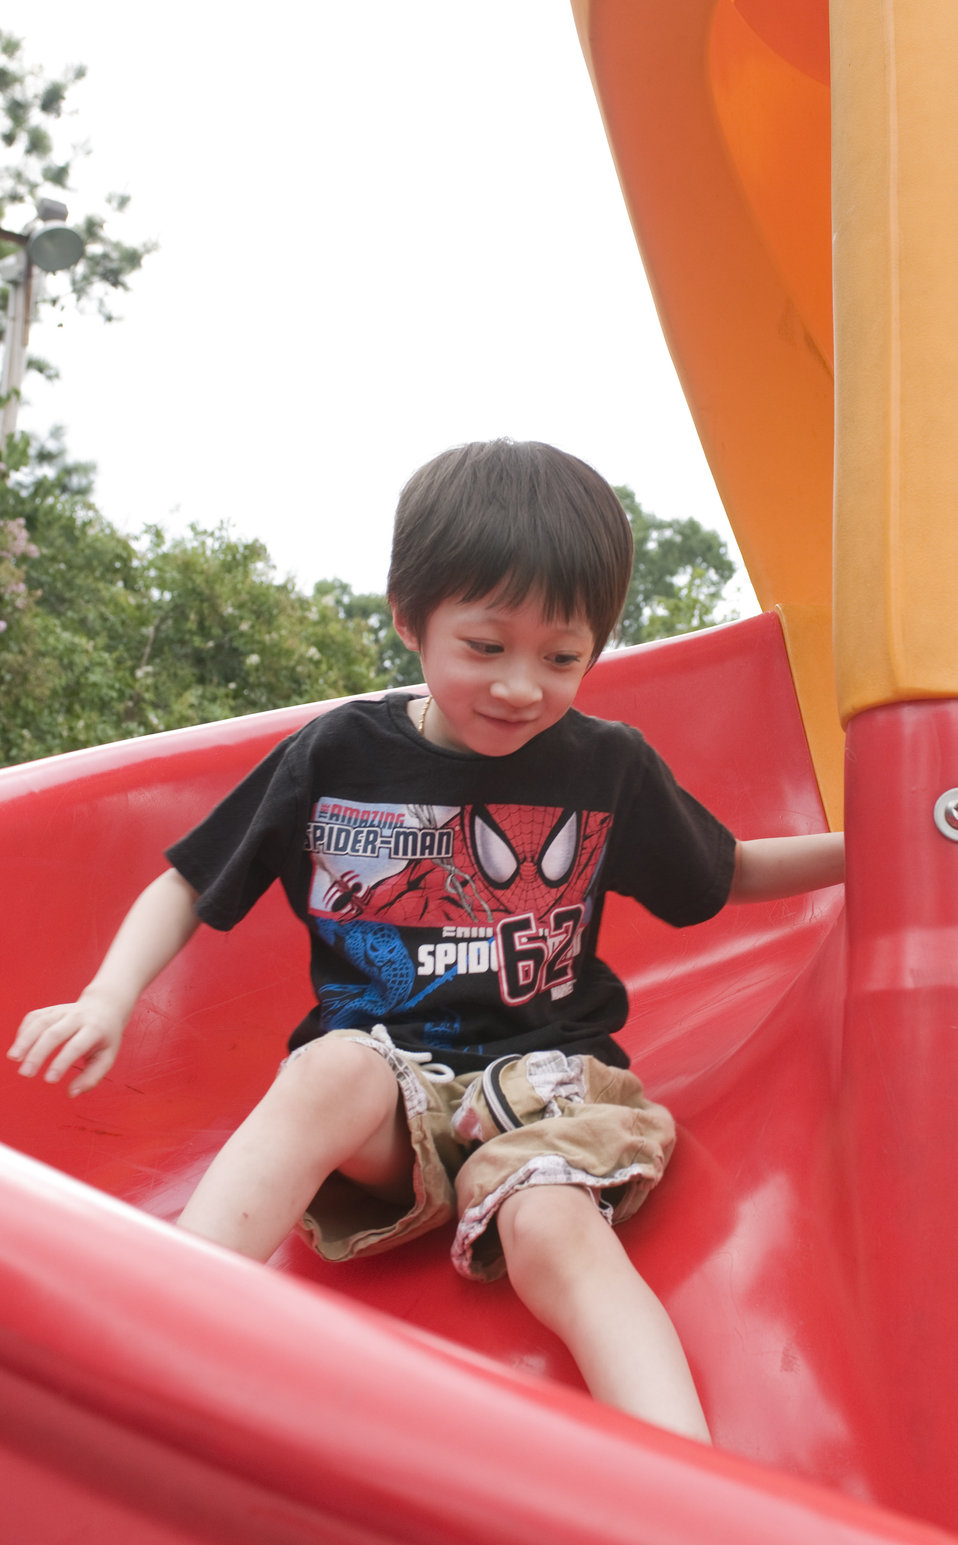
Under the watchful eye of his mother, this young boy was taking a trip down a bright red slide at a neighborhood playground. Note that he was wearing a darkly-colored t-shirt, and denim shorts, which help protect his skin from the sun's harmful rays. He was also wearing a coating of sunscreen on his sun-exposed skin.